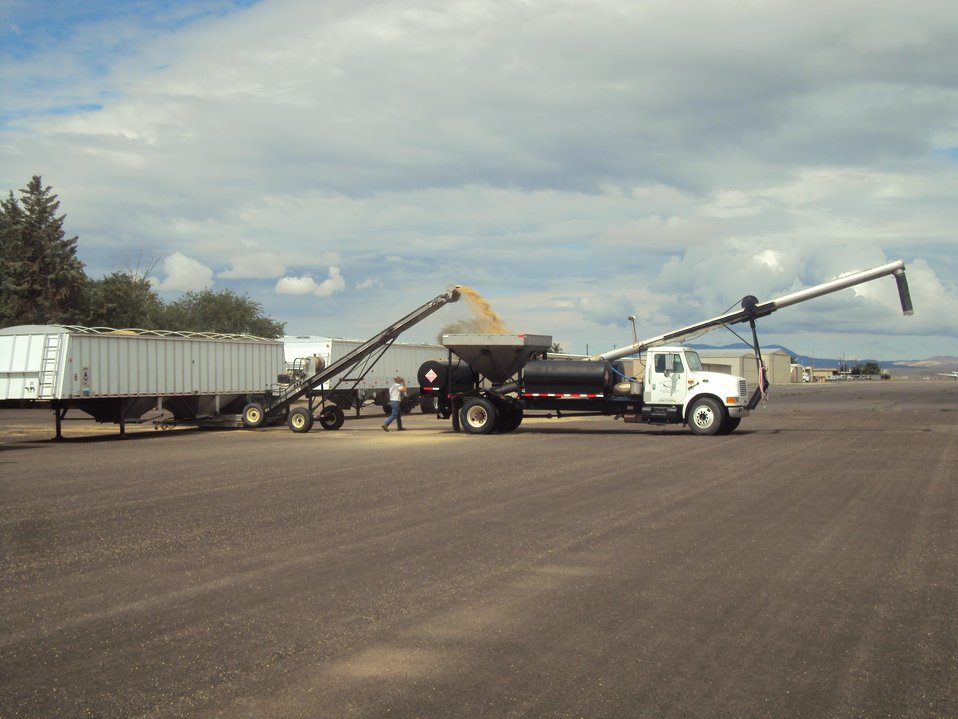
A truck is loaded with seed to resupply an Air Tractor for aerial seeding of severe burned areas of the Silver Fire. The Silver Post Fire response has the Burned Area Emergency Response (BAER) team beginning operations to seed acres of high burn severity and to mulch additional acres. Seeding reduces effects to downstream life, property, and infrastructure by reducing erosion and runoff. Areas of high burn severity are to be seeded with a quick germinating, non-persistent annual cereal barley that would provide rapid ground cover. A small percentage of native perennial species would also be included to give the burned area a jump start in natural recovery, and provide for long-term ground cover. Mulch is the most effective treatment for controlling erosion and runoff, as it provides immediate ground cover. Mulch also assists in stabilizing soil in and around these areas. Aircraft for seeding operations will be based at the Gila National Forest Air Tanker Base.